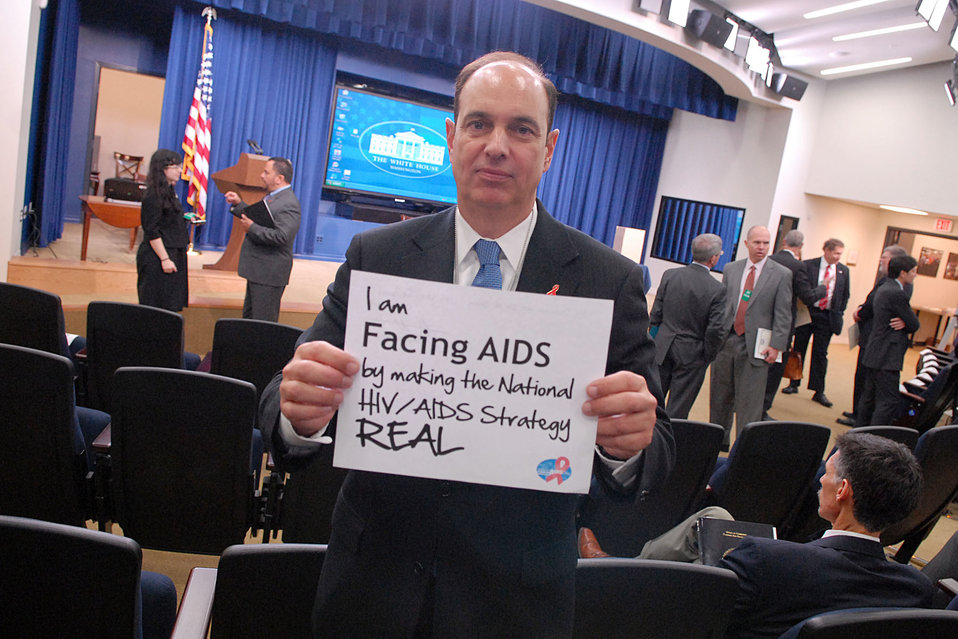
I am Facing AIDS by making the National HIV/AIDS Strategy REAL